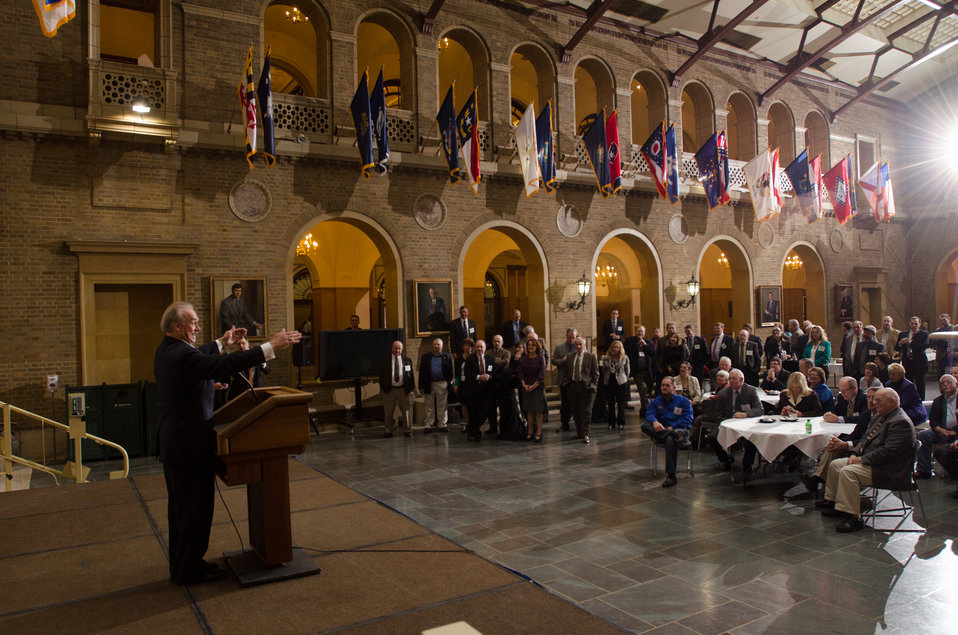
Keynote speaker and former National Football League Pittsburgh Steelers halfback Robert Patrick 'Rocky' Bleier spoke about the importance of milk in his childhood growth, and recounted some of his historic game-winning football play, during a luncheon with dairy producers, Dairy Management, Inc., (DMI) and other stakeholders from the dairy producers industry, at the Whitten Building Patio, in Washington, D.C. on Tuesday, Feb. 26, 2013.